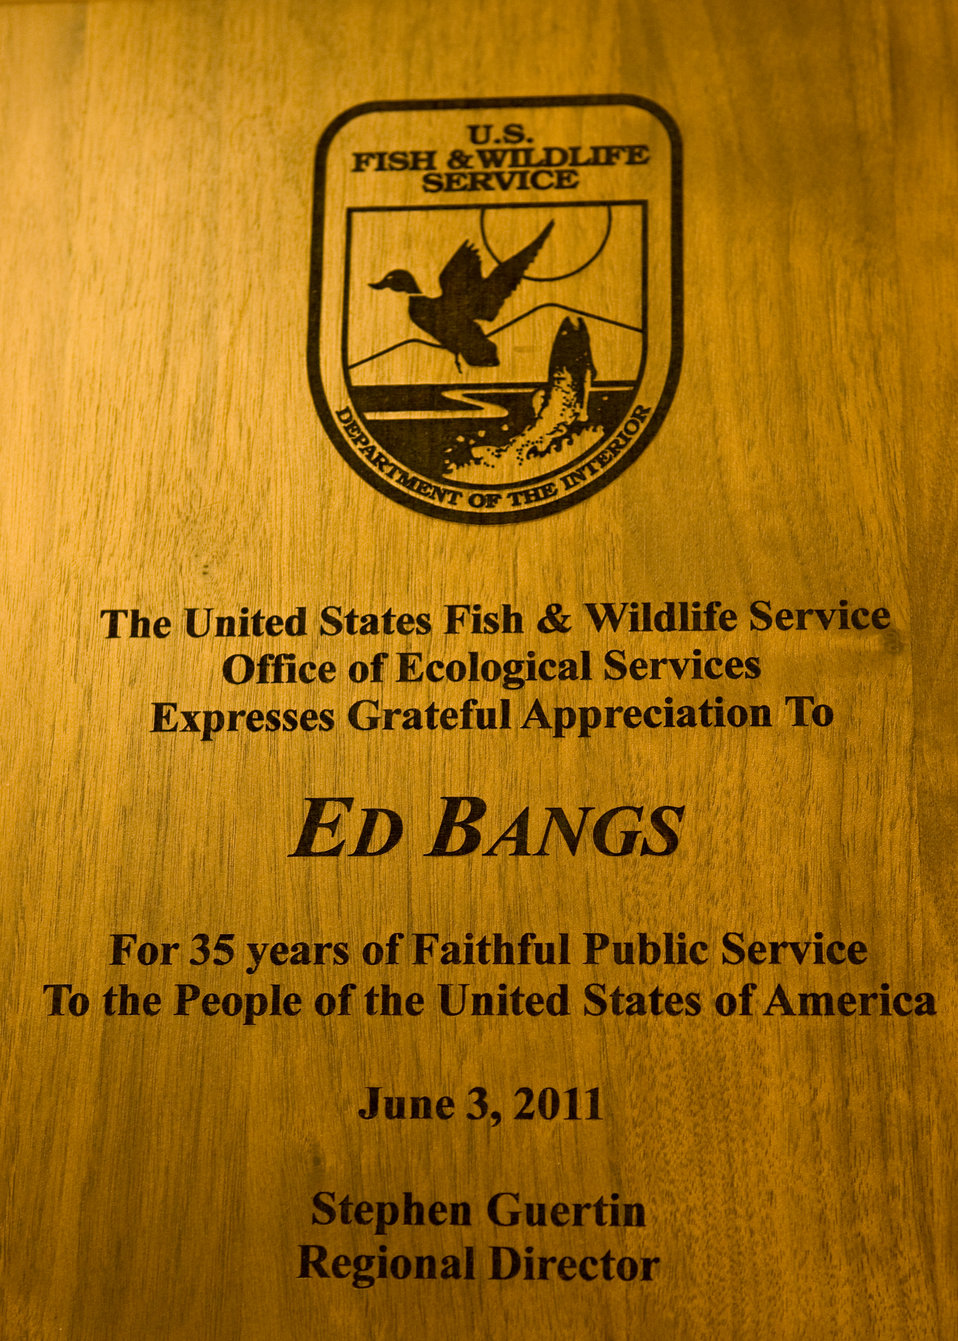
U.S. Fish and Wildlife Plaque

On May 23rd, 2011 The U.S. Fish and Wildlife Service Mountain-Prairie Region honored three of the most influential individuals in wolf recovery in the Northern Rocky Mountains: Ed Bangs, Steve Fritts, and Margot Zallen. Ed Bangs started the event with an hour-long presentation, “Wolf Conservation: The Good, The Bad, and The Ugly.”

Following the presentation, Regional and National leadership recognized the imminent retirement of Ed, Steve, and Margot with a variety awards for their contributions.